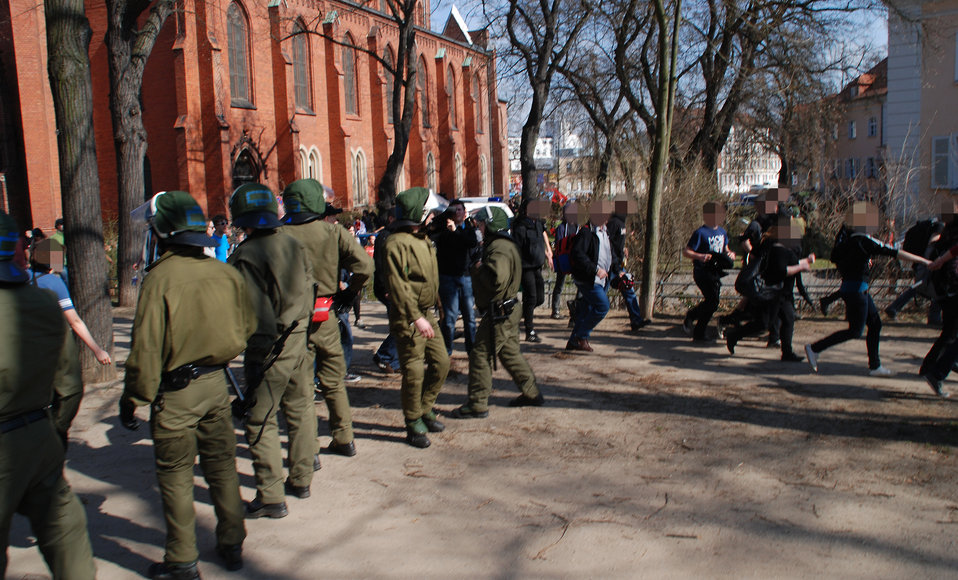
Proteste gegen den Nazi-Aufmarsch am 24.3.2012 in Frankfurt (Oder)